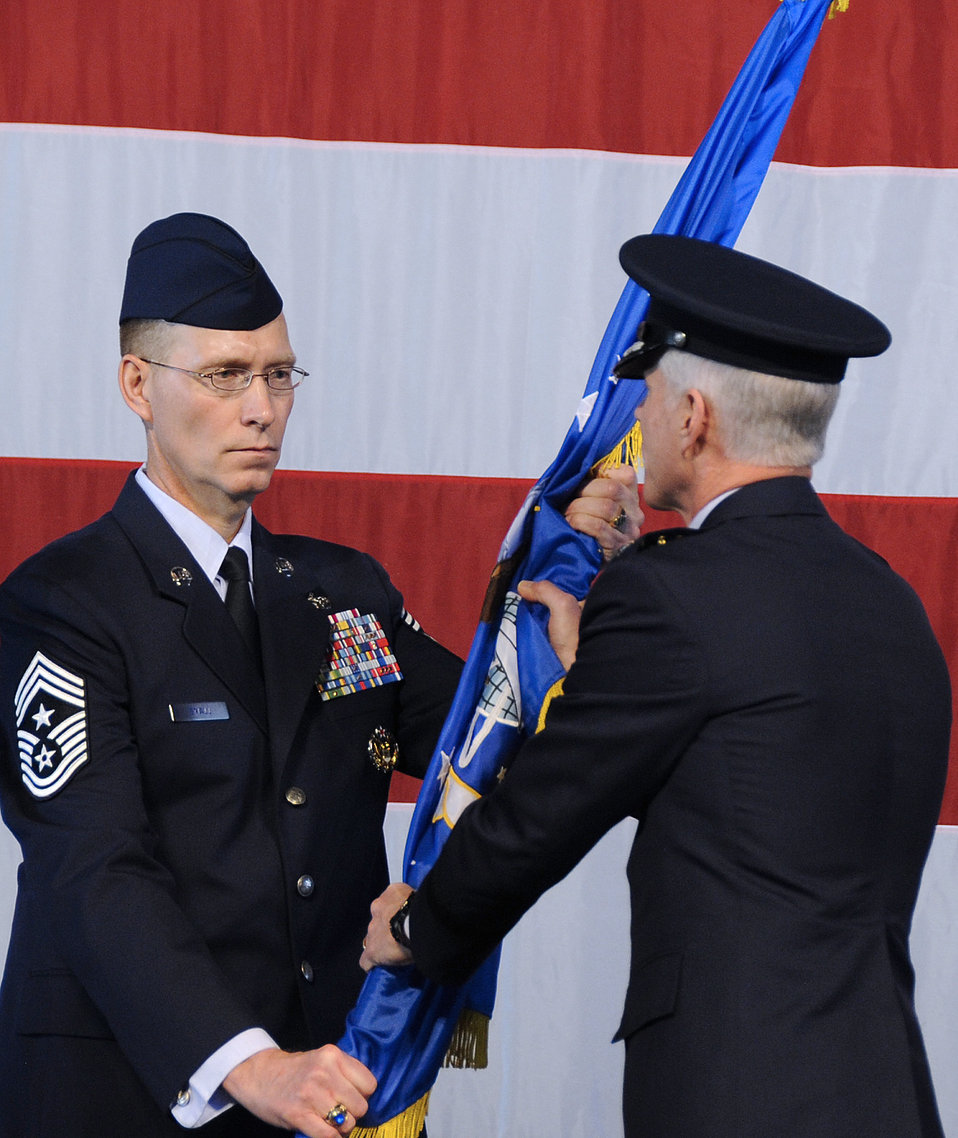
AFSPC commander

Gen. William L. Shelton receives the Air Force Space Command guidon from Chief Master Sgt. Richard T. Small, becoming the 15th commander of AFSPC during the change of command ceremony Jan. 5, 2011, at Peterson Air Force Base, Colo. Chief Small is the command chief master sergeant of AFSPC.